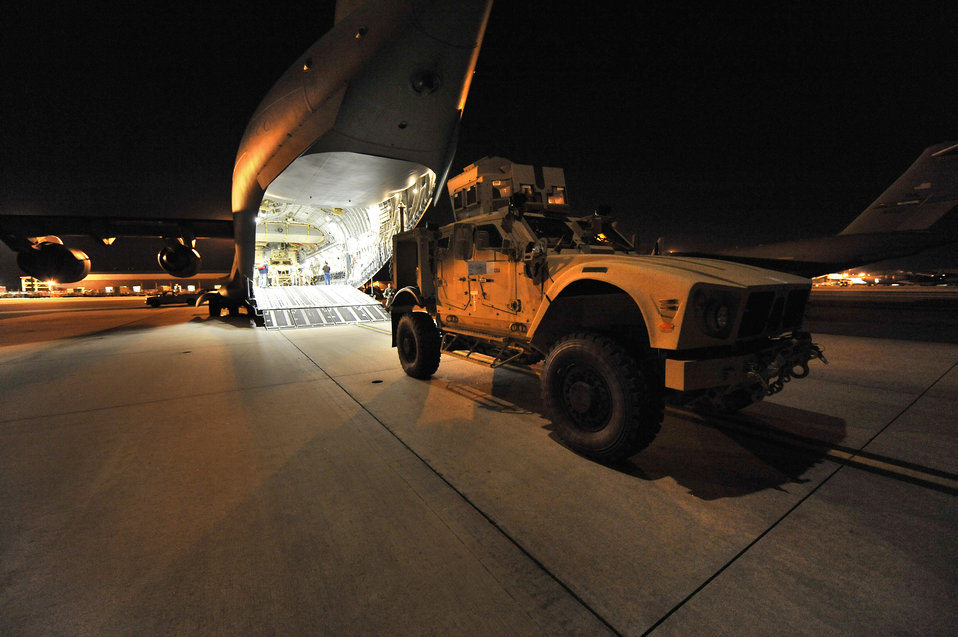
MATV load C-17

One of two mine-resistant, ambush-protected all-terrain vehicles, or M-ATVs, is loaded onto a C-17 Globemaster III at Charleston Air Force Base, S.C., Sept. 30, 2009. The two M-ATVs are the first to be delivered to the Afghanistan theater for operational use. The C-17 is based out of McChord AFB, Wash.